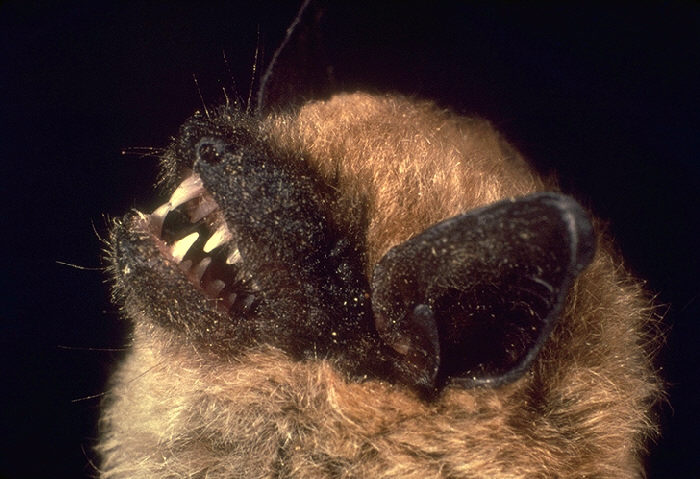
Big brown bat, Eptescius fureus.